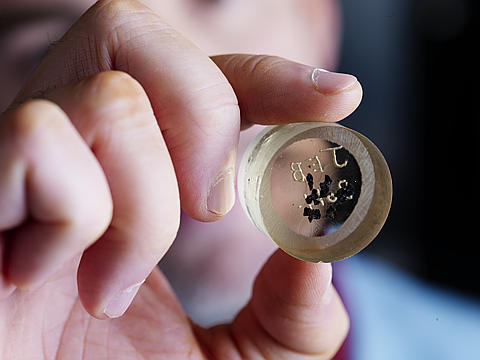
Pacific Northwest National Laboratory addresses carbon emissions that contribute to climate change which has become an international challenge.
Shown are small grains of basalt that have been mounted epoxy. One option for reducing greenhouse gas buildup in the atmosphere is storing it deep underground. Laboratory experiments confirm that carbon dioxide is effectively trapped when injected into basalt formations.